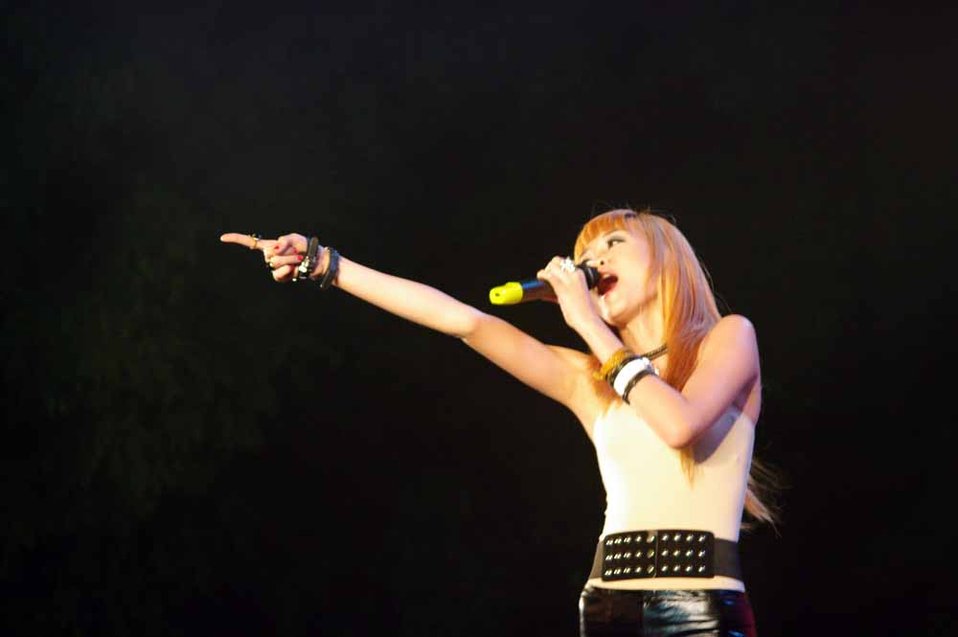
dance4life, Hanoi